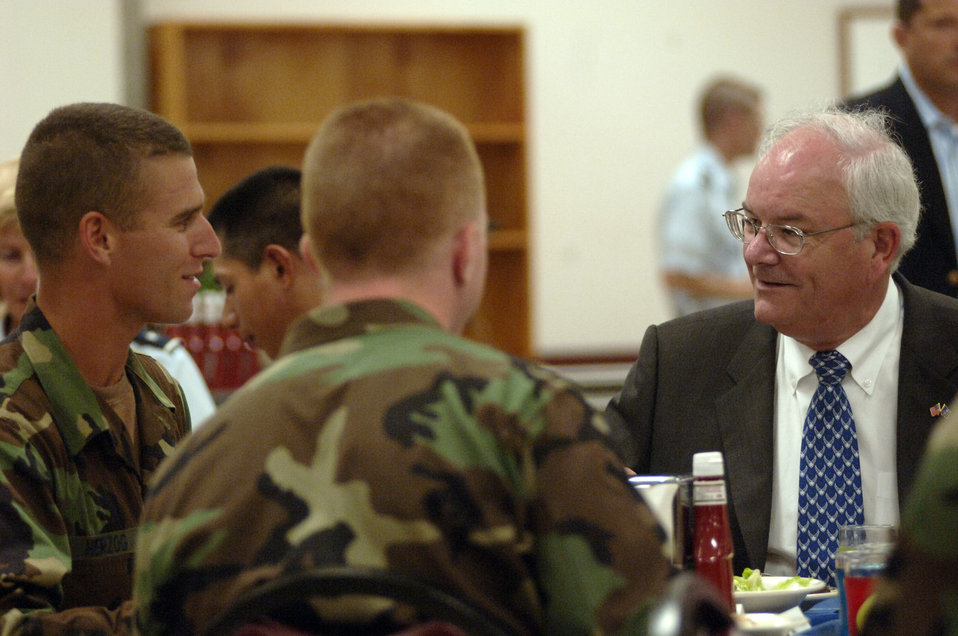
Secretary Wynne expects Airmen to continue to excel

Airmen Basic Jacob Herzog (left) and Bradley Cline talk with Secretary of the Air Force Michael W. Wynne at lunch at Lackland Air Force Base, Texas, on Friday, June 2, 2006. Secretary Wynne was in San Antonio visiting various military installations and training sites. The Airmen are assigned to the 326th Training Squadron.